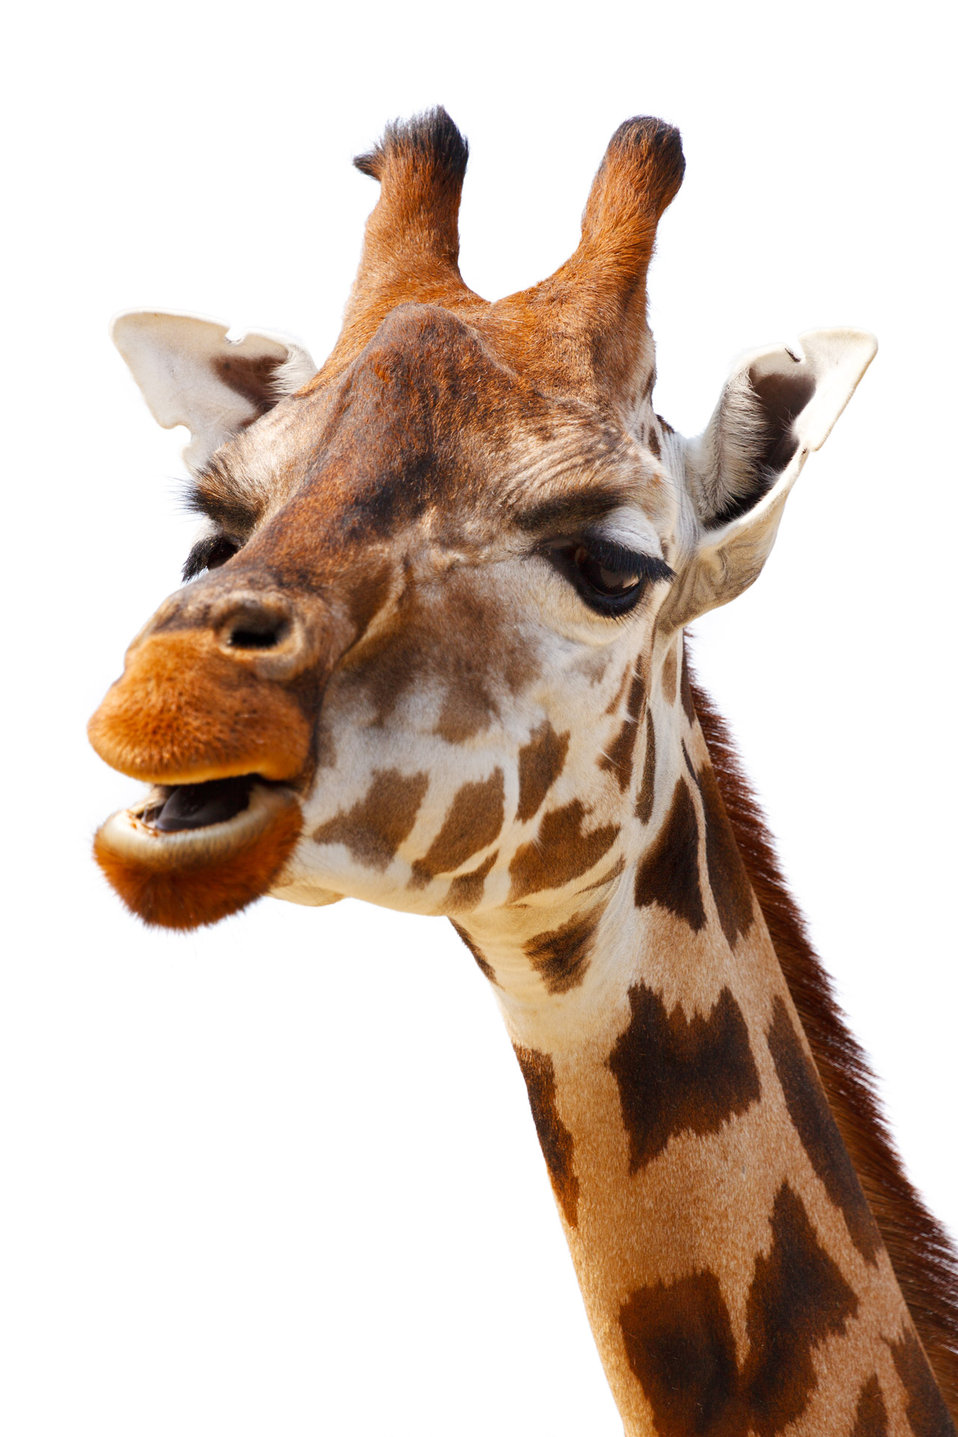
Giraffe isolated on white background.